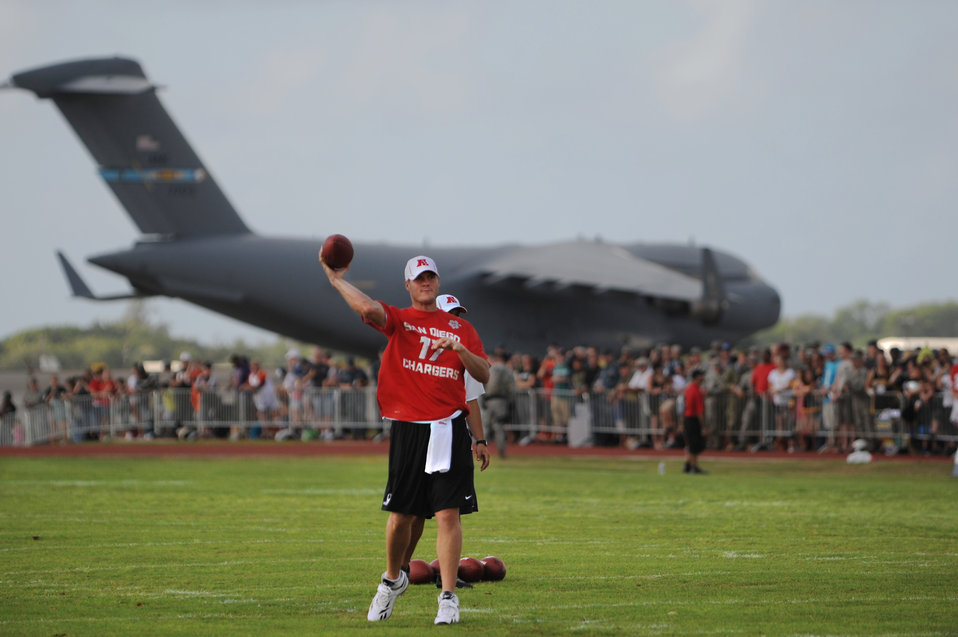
Charged up

Philip Rivers, the San Diego Chargers’ quarterback, warms up during the AFC practice on Earhart Field on Jan.26, 2012, at Joint Base Pearl Harbor-Hickam, Hawaii. The Pro Bowl players spent their practice sessions near JB Hickam's flightline and signed autographs for hundreds of military members and their families. Rivers is an eight-year veteran with 24,285 total passing yards and 163 touchdowns.